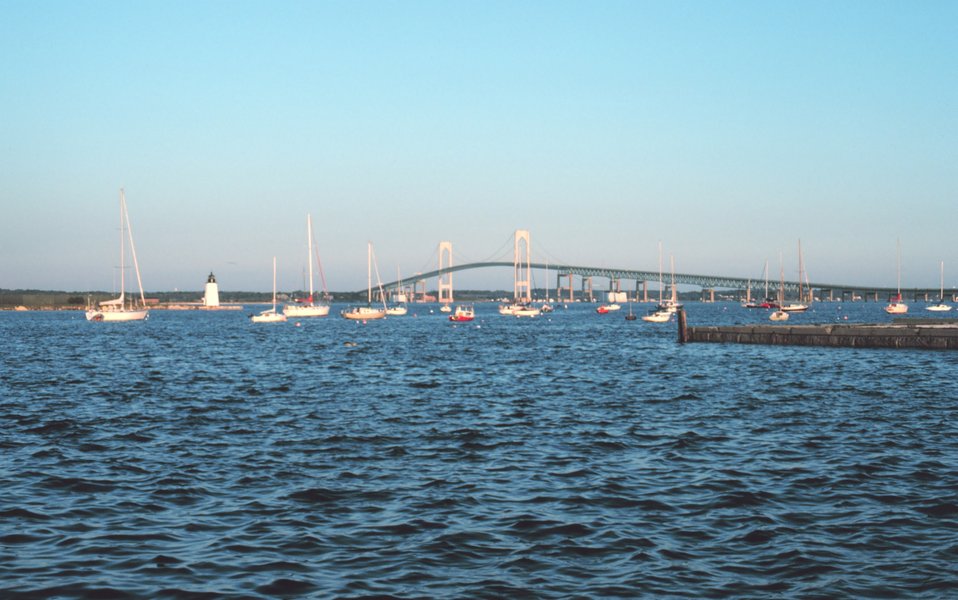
A view of the Newport Bridge